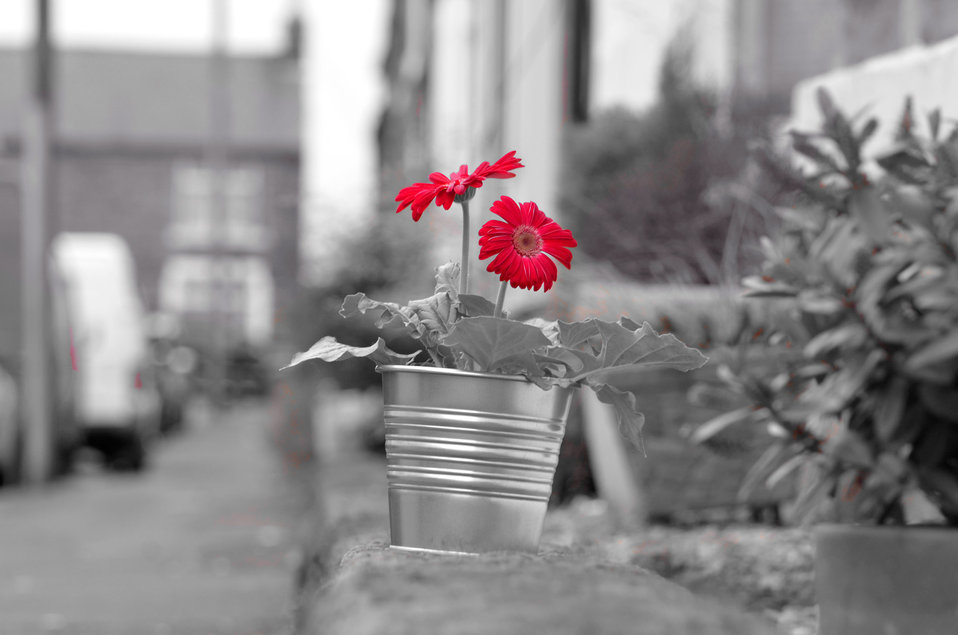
Red flower on the street.